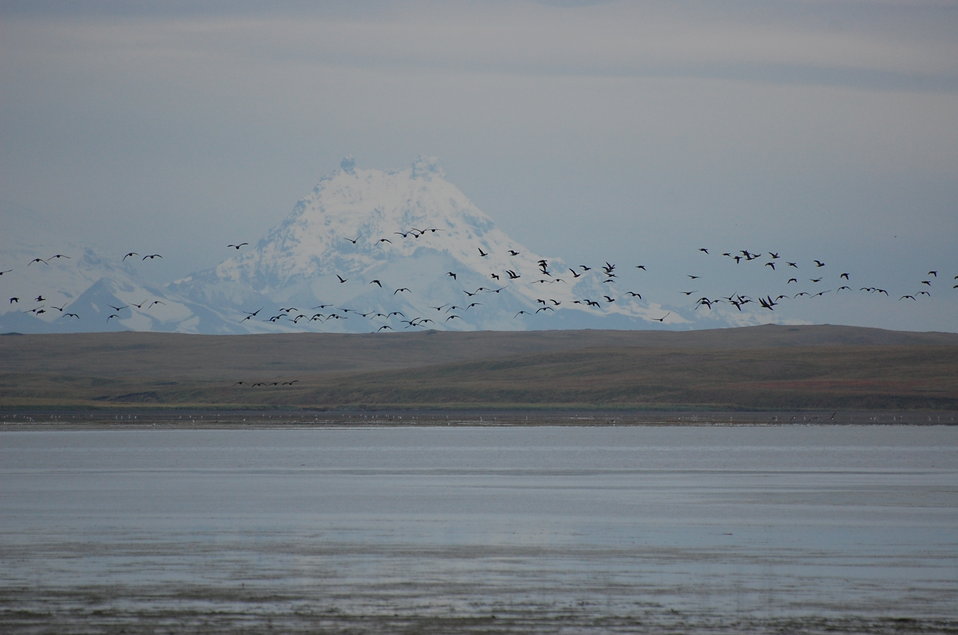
Brant and Isanotski Volcano

Izembek National Wildlife Refuge